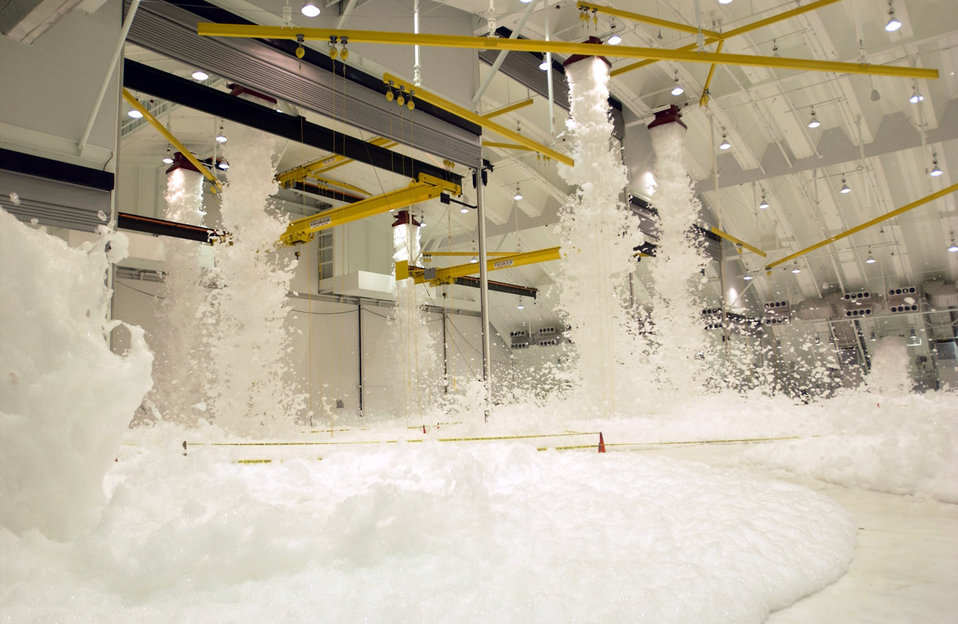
Foam suppression

ANDERSEN AIR FORCE BASE, Guam -- Foam from a fire suppression system sprays from the walls and ceiling inside a newly built aircraft maintenance hangar during a test and evaluation exercise here.